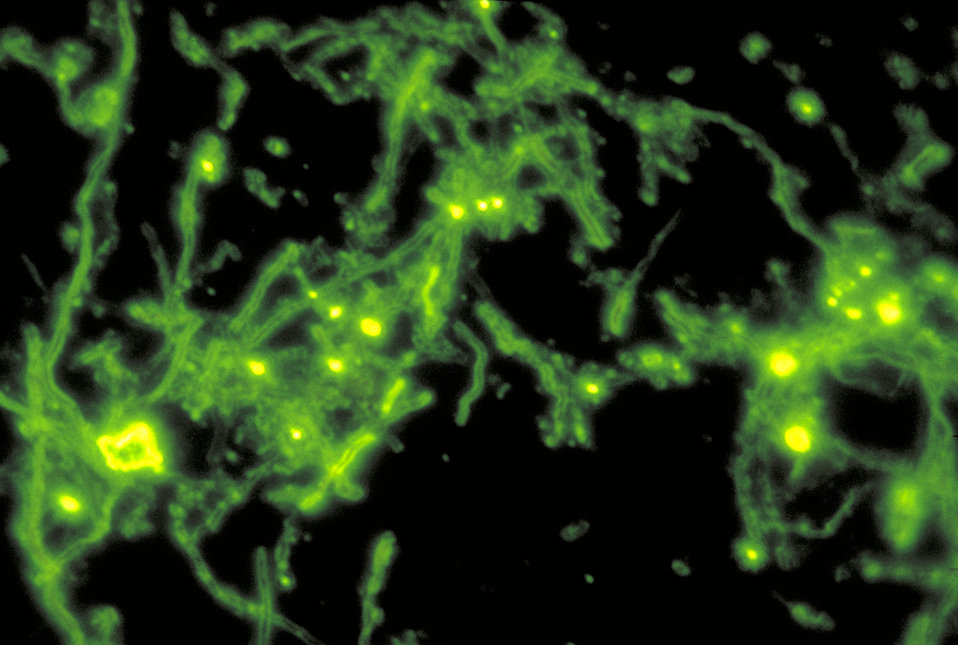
A photomicrograph of Actinomyces naeslundii using an Immunofluorescent Antibody staining technique; Magnified 1187X.